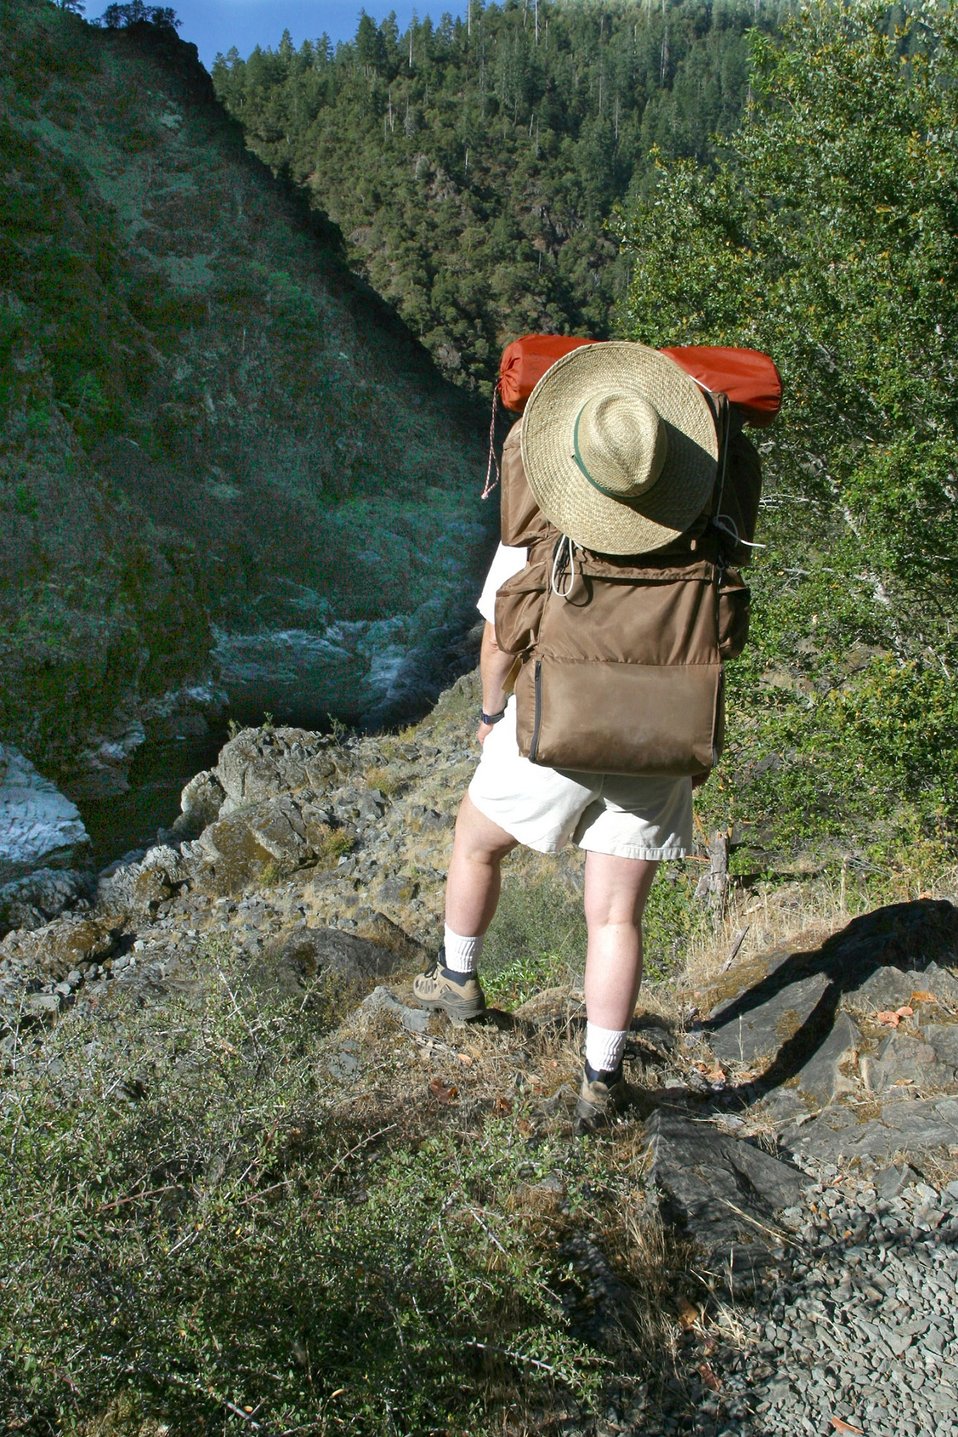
Hiking the Rogue River Trail between Mule Creek and Blossom Rapids.